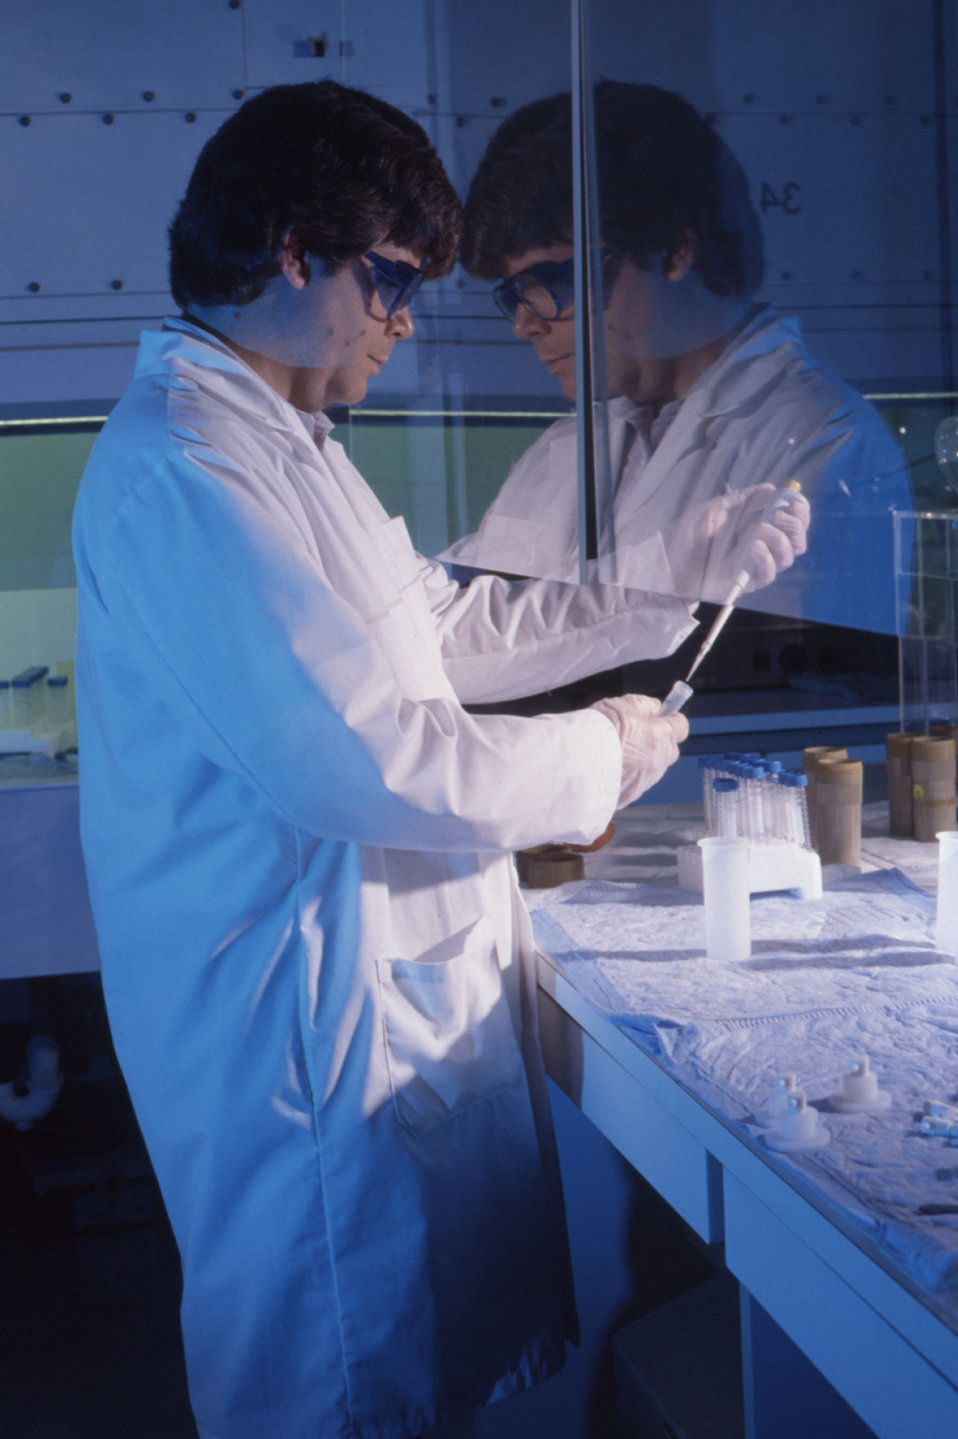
This CDC laboratory worker is shown pipetting specimens during a lab experiment.